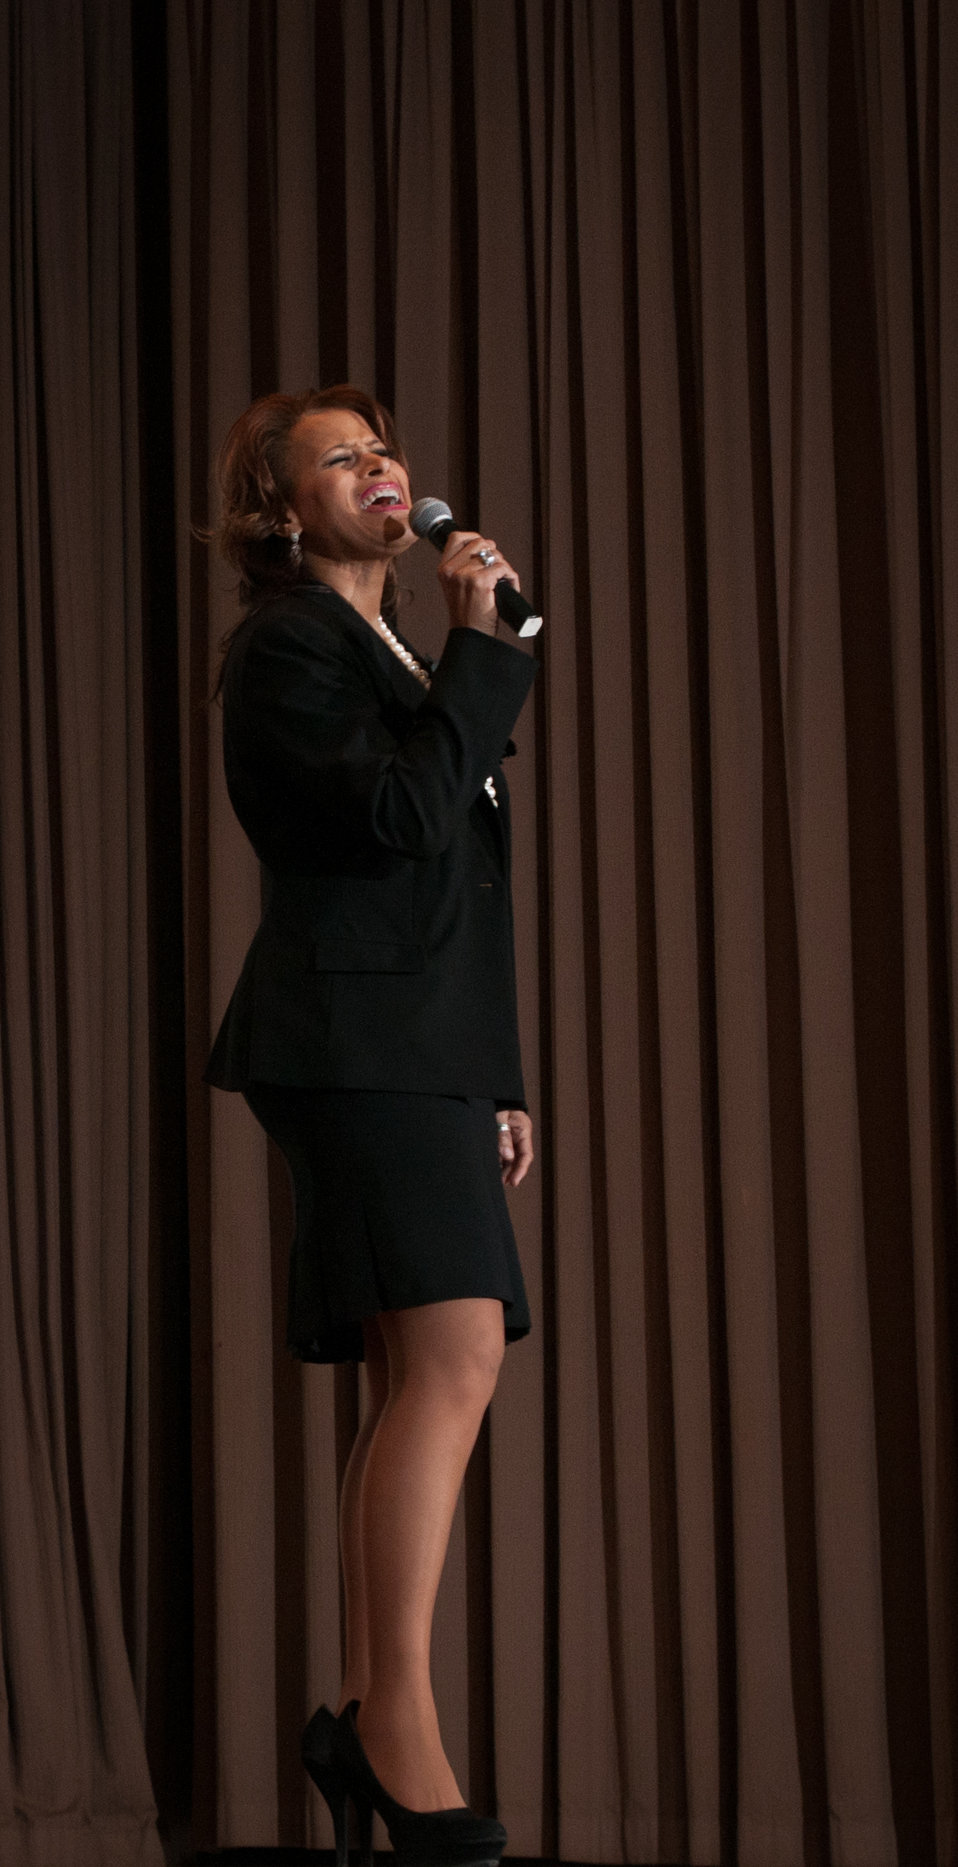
Renee Allen sings “I’m every Woman” to close-out the 2013 Women’s History Month Observance event, “Women Inspiring Innovation Through Imagination: Celebrating Women in Science, Technology, Engineering, and Mathematics, on Thursday, March 21, 2013, in Washington, D.C.